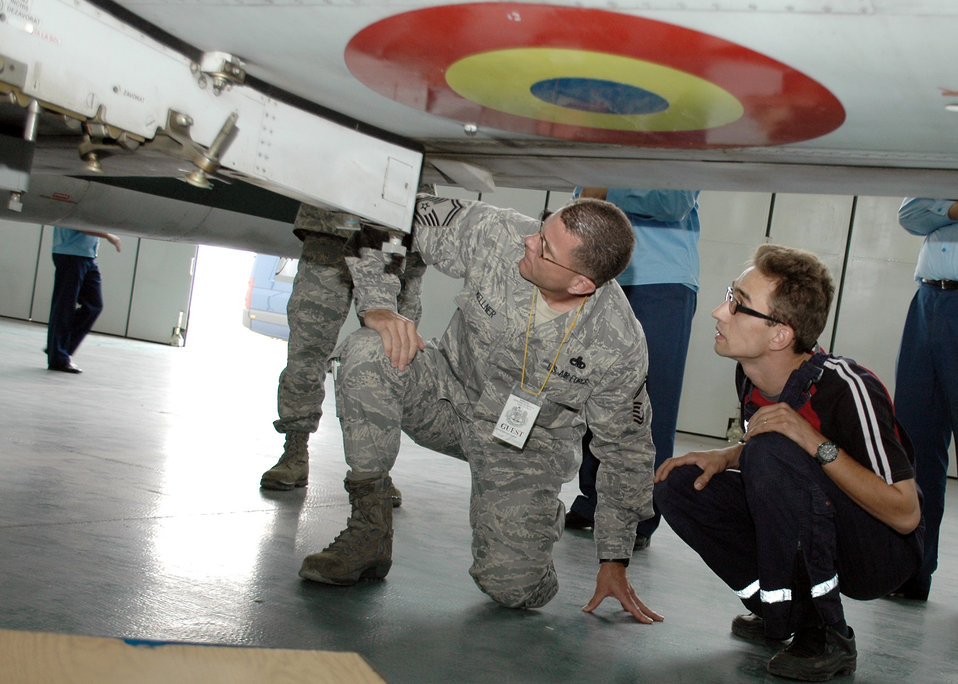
U.S., Romanian Air Forces discuss aircraft maintenance

Senior Master Sgt. Timothy Kellner receives a walk-around tour of a MiG-21 Lancer Aug. 26, 2009 at the 86th Air Base in Fetesti, Romania. The tour was part of a three-person U.S. Air Forces in Europe maintenance NCO training program traveling contact team visit with Romanian air force aircraft maintainers and warrant officer and NCO school instructors Aug. 25 through 28. Sergeant Kellner is the 31st Maintenance Group quality assurance superintendent with 21 years of experience all on the F-16 Fighting Falcon.